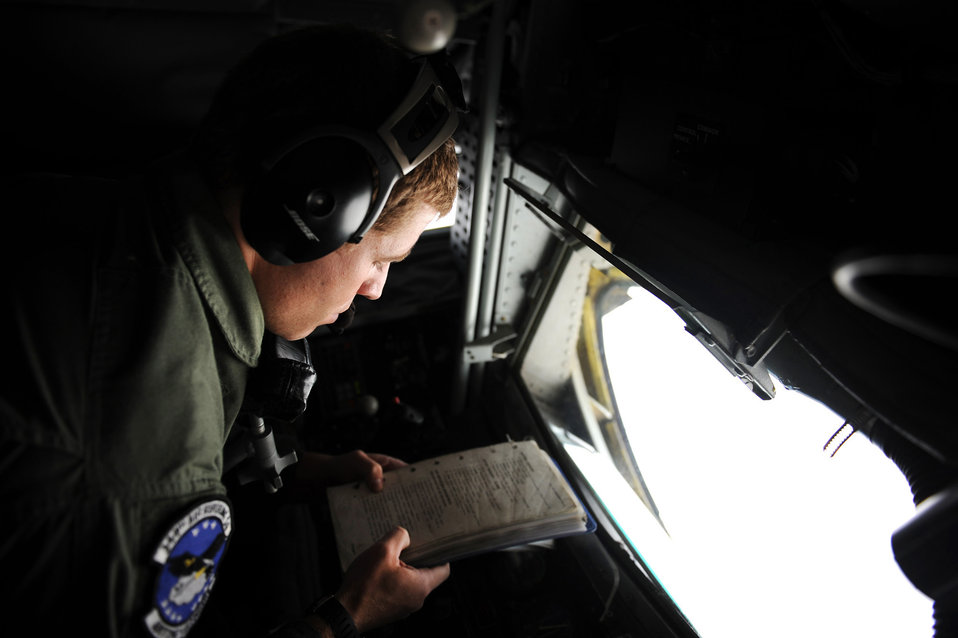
Air Refueling

Staff Sgt. Patrick Martin reviews a checklist before refueling a B1B Lancer on a KC-135 Stratotanker during a training mission, Apr. 21, 2010, near Northern New Mexico. Sergeant Martin is a boom operator assigned to the 344th Air Refueling Squadron, McConnell Air Force Base, Kan.